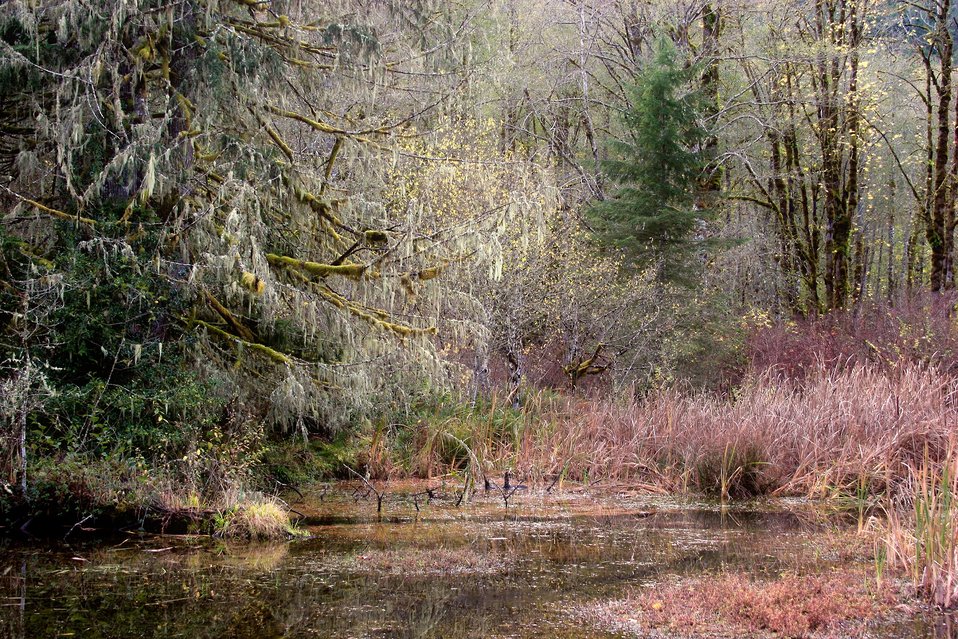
Fall colors at BLM's Wildwood Recreation Site.